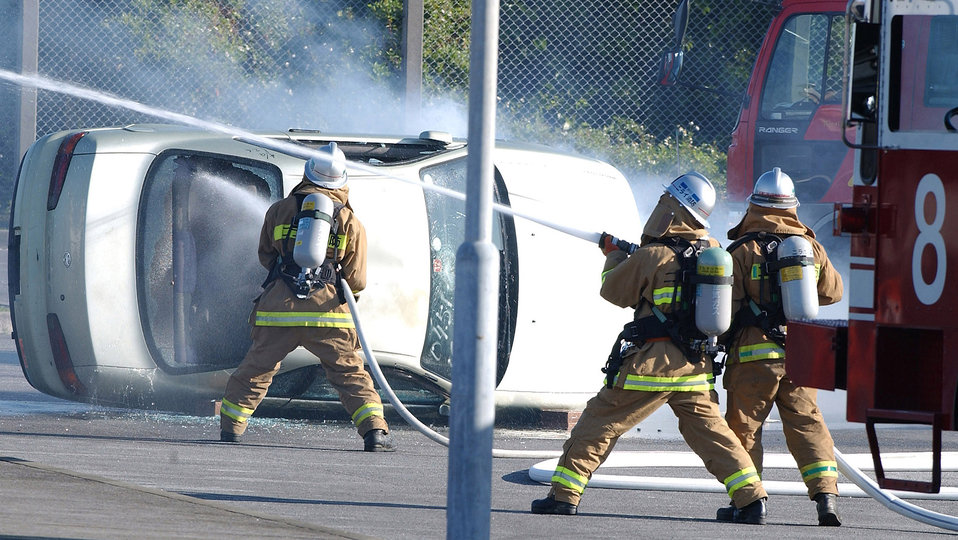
Bilateral exercise at Kadena

Kadena Air Base and Okinawan firefighters spray down a simulated aircraft accident site at the first bilateral off-base exercise Feb. 28 between Kadena Air Base emergency responders and local Okinawan police, fire and medical teams. The exercise was conducted to enhance cooperation between base and off-base agencies in the event of an aircraft accident.